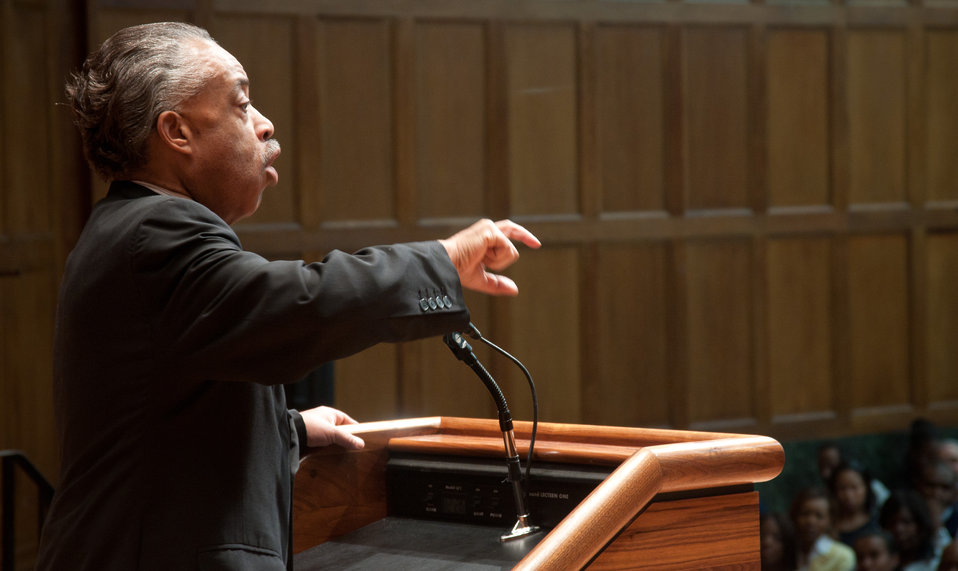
Reverend Al Sharpton, Jr. gave an energetic keynote speech at the Department of Agriculture’s African American History Month Program, on Monday, February 28, 2011 in Washington, D.C. Rev. Sharpton’s topic was “Civil Rights in the Age of Obama.”